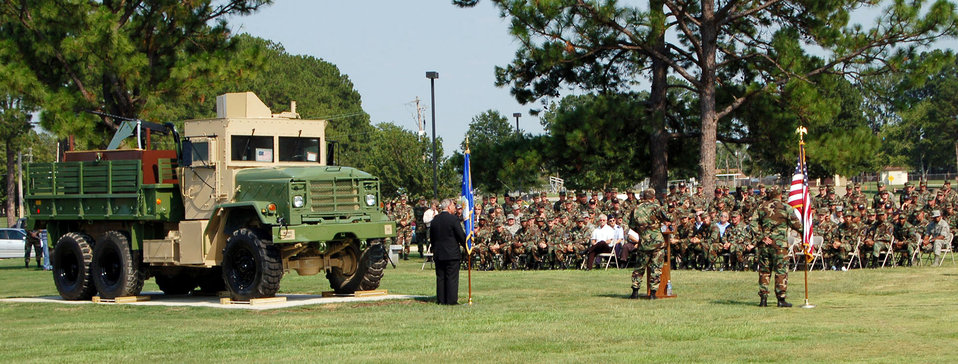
Dedication recognizes Airmen who deliver under fire

Chief Master Sgt. Malcolm